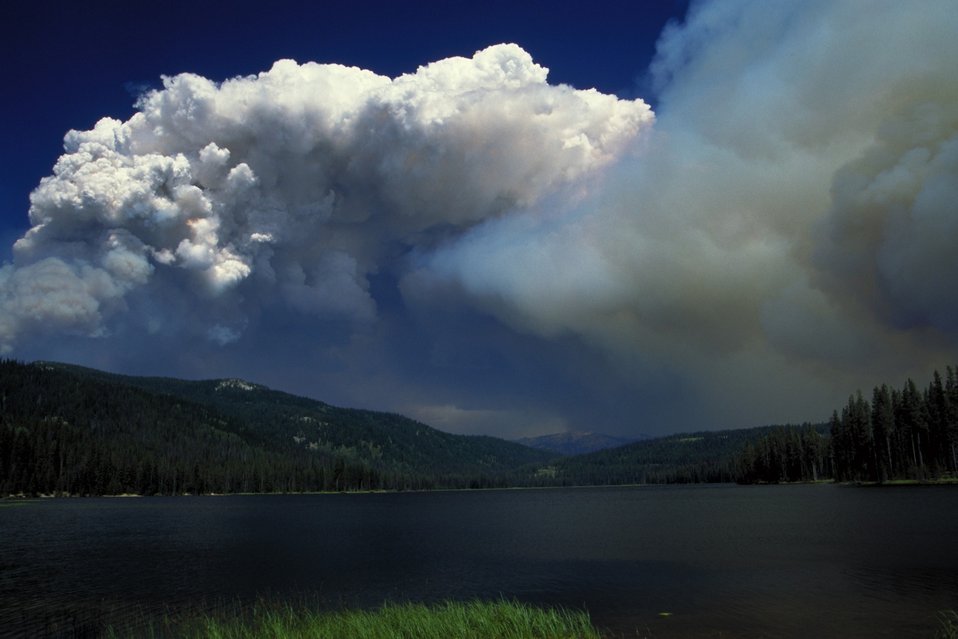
Fire smoke Fire Season 2000 Lower Snake River District LSRD